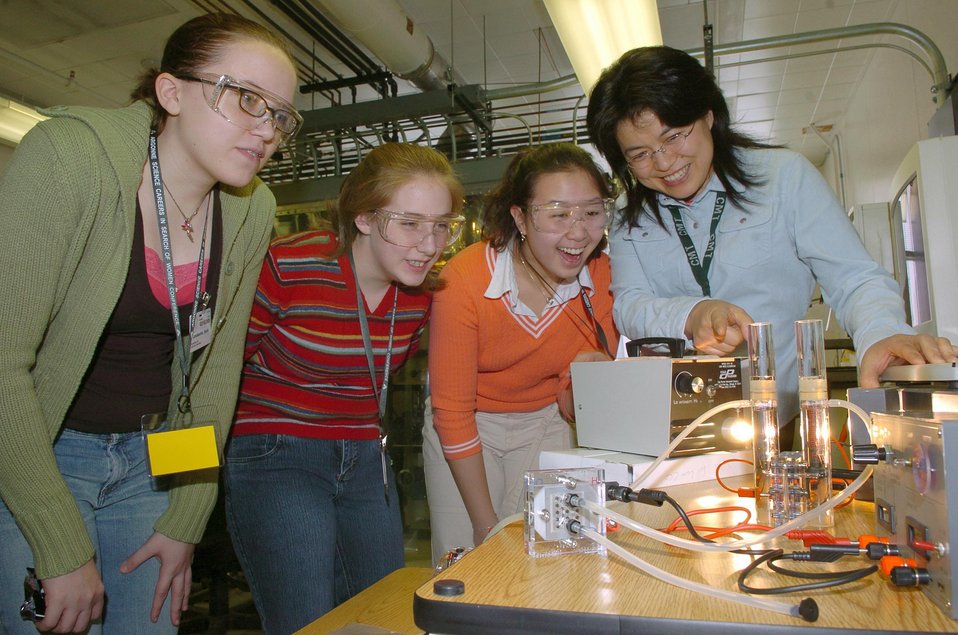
Argonne National Laboratory researcher talks with students about fuel cell development at the 2005 Science Careers in Search of Women Conference.

About 350 students from nearly 60 schools throughout the Chicago area will participate in the day-long conference. The goal is to encourage high school women to consider a career in science and technology. Science Careers in Search of Women puts students with scientists in various fields and provides and opportunity to spend the day interacting with positive female role models. Students participate in panel discussions with speakers from various scientific and engineering disciplines. The students also tour several labs at ANL including biology, chemistry, physics, computer science and engineering, as well as visit career booth exhibits.